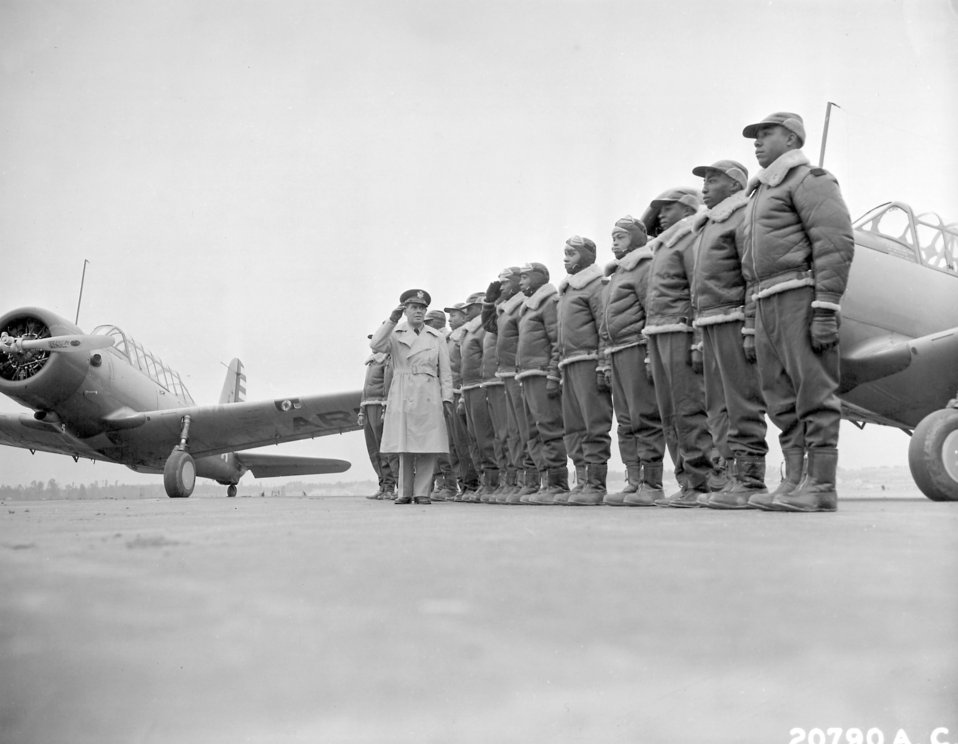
Review of the first class of Tuskegee cadets

Maj. James A. Ellison returns the salute of Mac Ross of Dayton, Ohio, as he passes down the line during review of the first class of Tuskegee cadets; flight line at U.S. Army Air Corps basic and advanced flying school, Tuskegee, Alabama, 1941. Partial three-quarter left front view from low angle of Vultee BT-13 trainer at left.